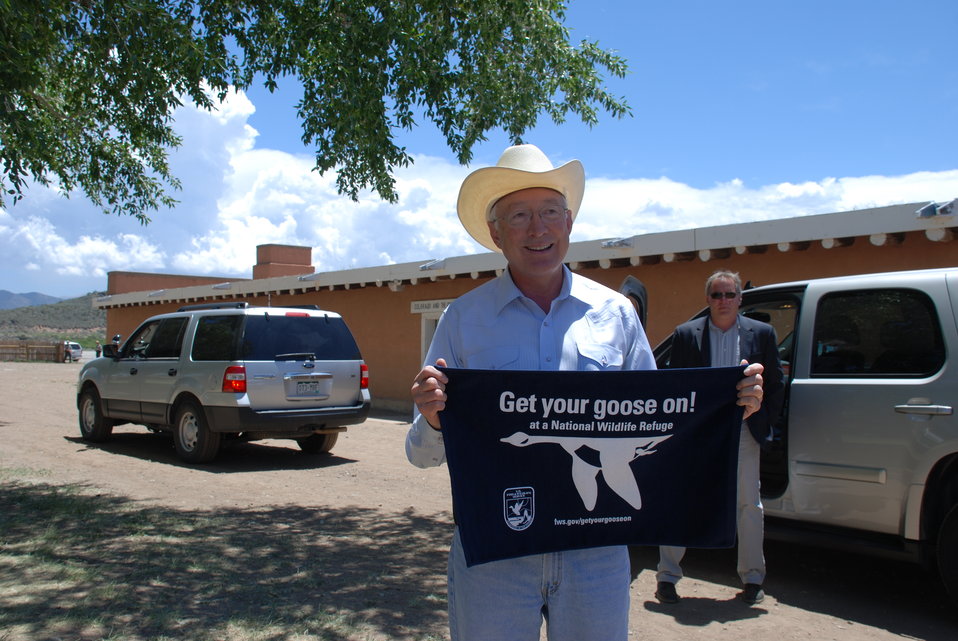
Ken Salazar Gets His Goose On!

Secretary of the Interior, Ken Salazar, poses with his GYGO! towel after speaking at an event announcing the historic donation of a 90,000-acre conservation easement in southern Colorado.